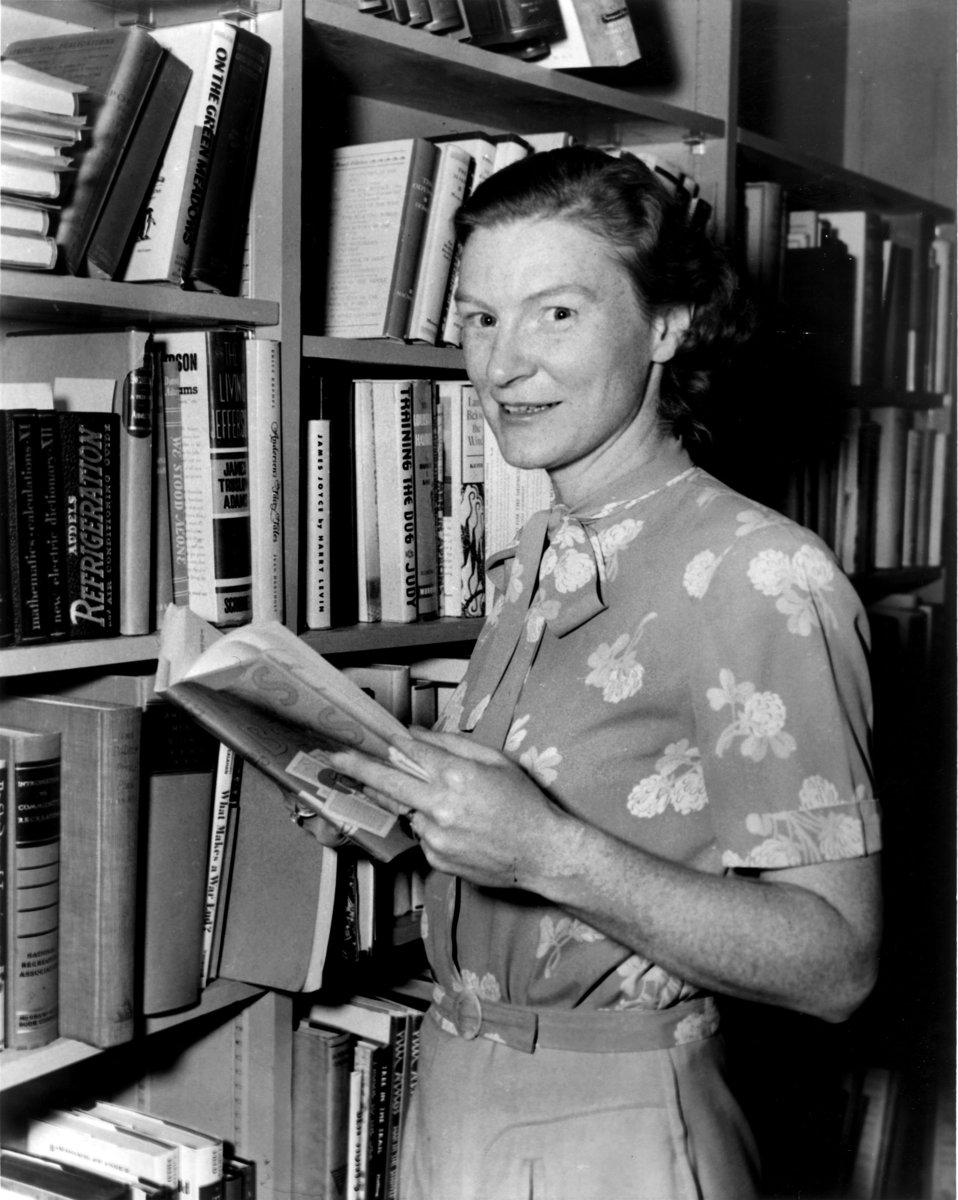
Librarian Oak Ridge

PRO154 DOE photo by Ed Westcott 11-30-1944 Oak Ridge Tennessee